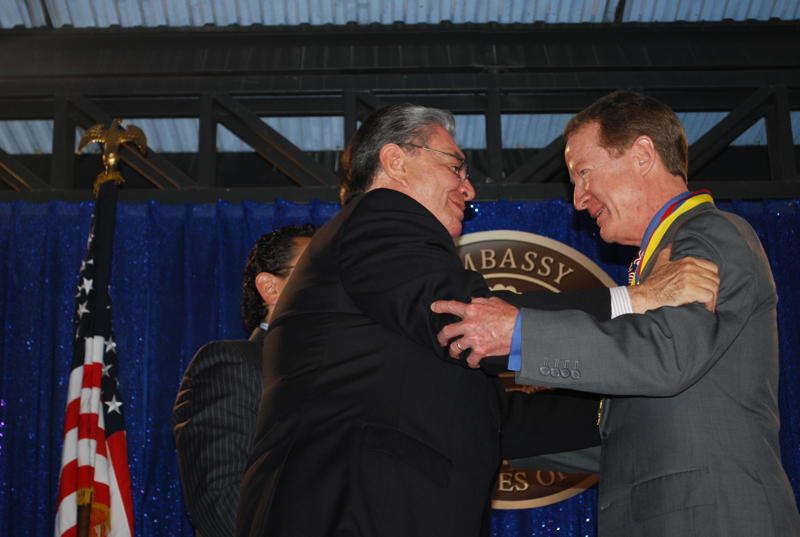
Colombian Minister of Interior Fabio Valencia Cossio Honors Ambassador Brownfield

Colombian Minister of Interior Fabio Valencia Cossio (left) honors U.S. Ambassador to Colombia William R. Brownfield (right) for his outstanding dedication and service towards furthering bilateral relations between the two nations during the U.S. Independence Day reception at the U.S. Embassy Bogotá in Colombia, on July 2, 2010.